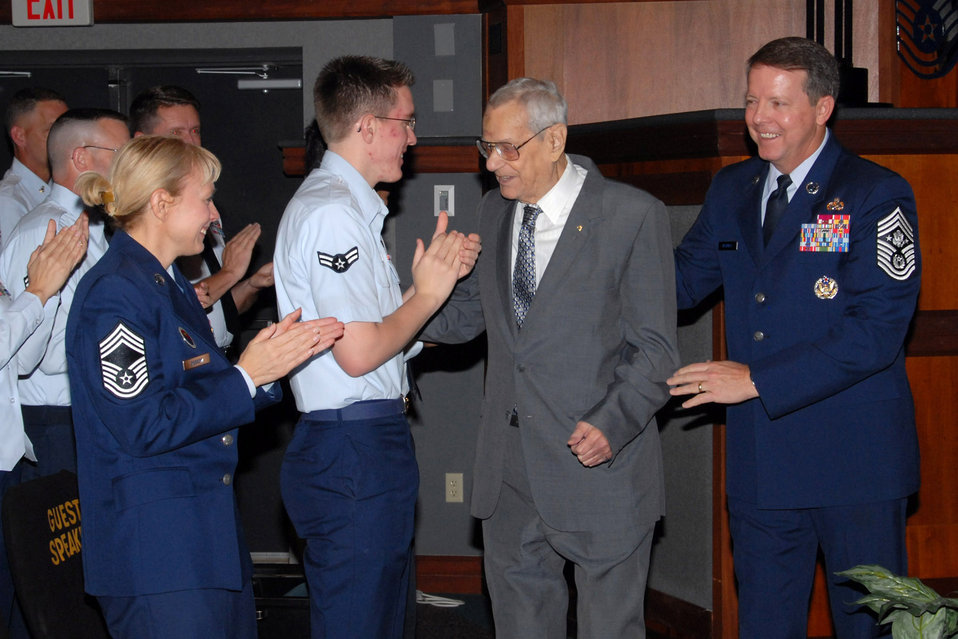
Air Force pioneer gone, but not forgotten

Chief Master Sgt. of the Air Force Paul W. Airey greets Airman 1st Class Matthew Shaffer and Chief Master Sgt. Pamela Derrow following a presentation in 2008. Escorting Chief Airey is current Chief Master Sgt. of the Air Force Rodney J. McKinley. Chief Airey passed away March 11. Chief Airey was the first chief master sergeant of the Air Force, Chief Derrow is the U.S. Air Forces in Europe command chief.